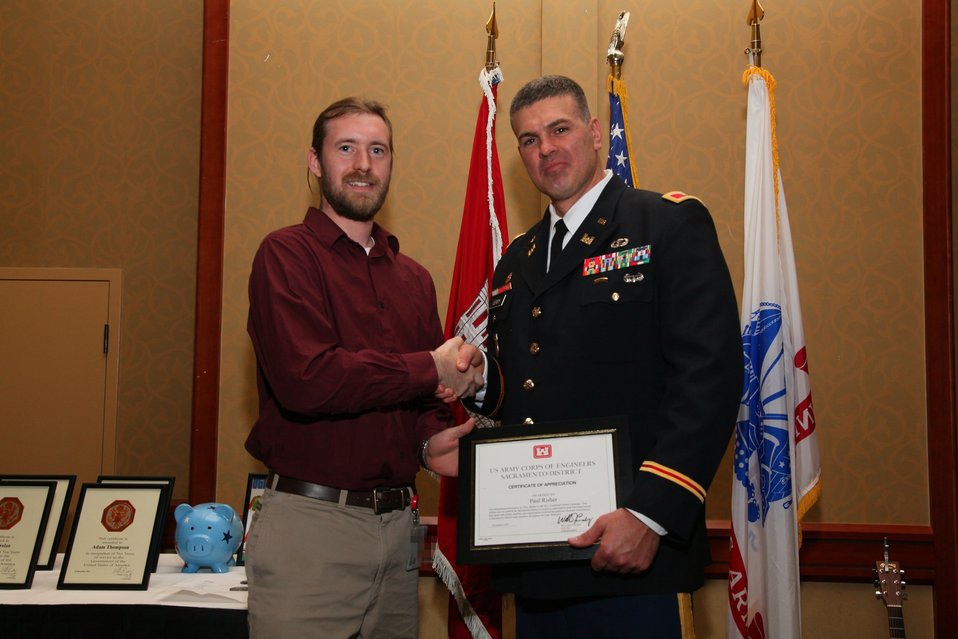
Sacramento District Holiday Party 2011